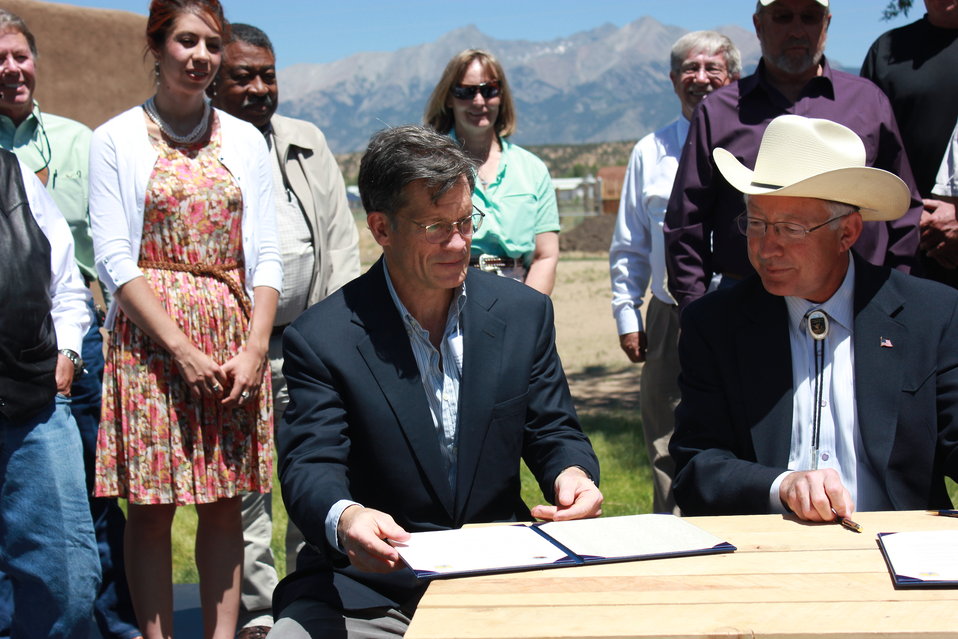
Historic Conservation Easement in Sangre de Cristo Mountains